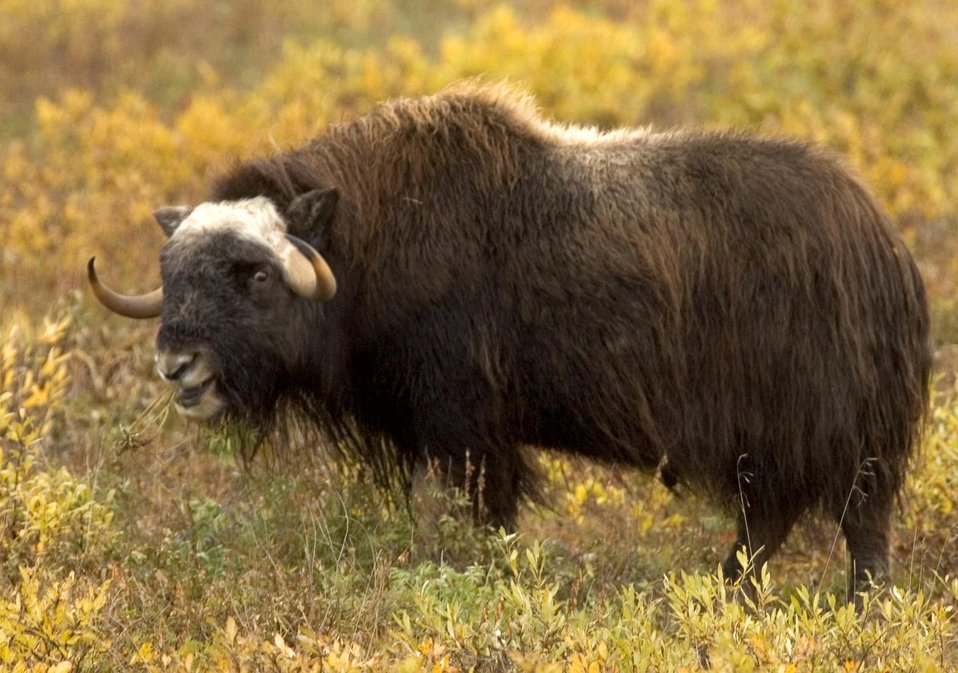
Arctic National Wildlife Refuge